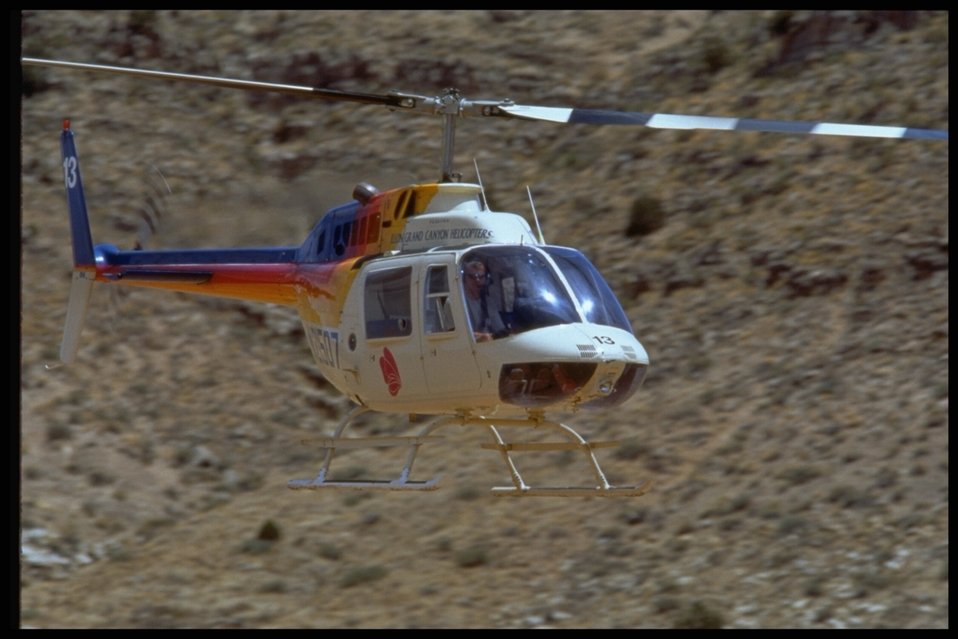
A helicopter landing in the Grand Canyon-Parashant National Monument.